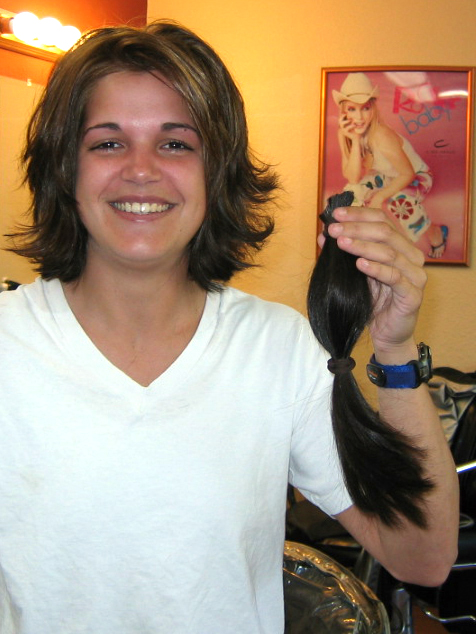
Airman donates hair to Locks of Love Airman donates hair to Locks of Love

EIELSON AIR FORCE BASE, Alaska -- Staff Sgt. Amanda Lamar holds up 11 inches of hair, which took her two years to grow before donating it to Locks of Love. The nonprofit organization provides hairpieces to financially disadvantaged children under the age of 18 with medical hair loss. Sergeant Lamar is the 354th Aircraft Maintenance Squadron unit deployment manager.